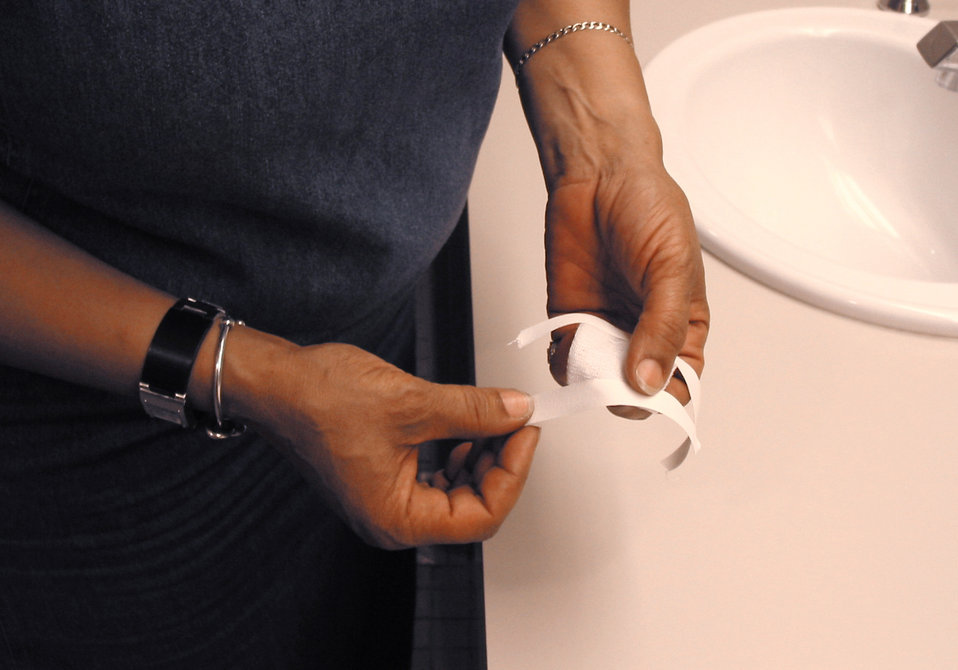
This image demonstrates how a smallpox vaccinee prepares a gauze bandage in order to cover her vaccination site.